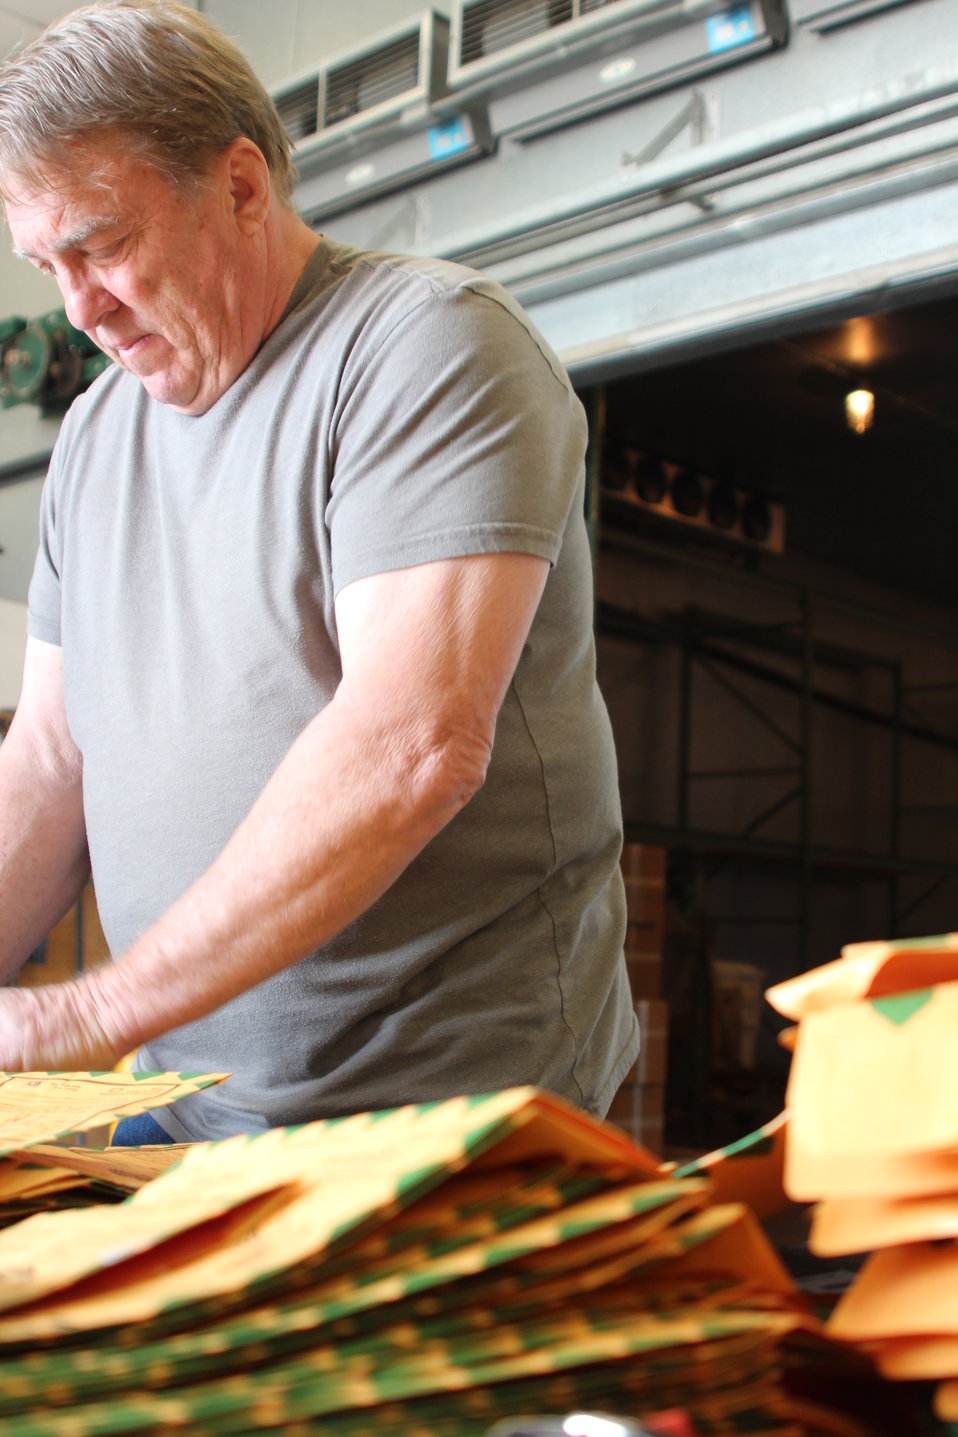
Wings by the thousands

Paul Walfoort, USFWS biological science technician, sorts through over 22,000 envelopes containing waterfowl wings. The envelopes come in from hunters in Alaska, Washington, Oregon, California, Nevada, Arizona and many other states.